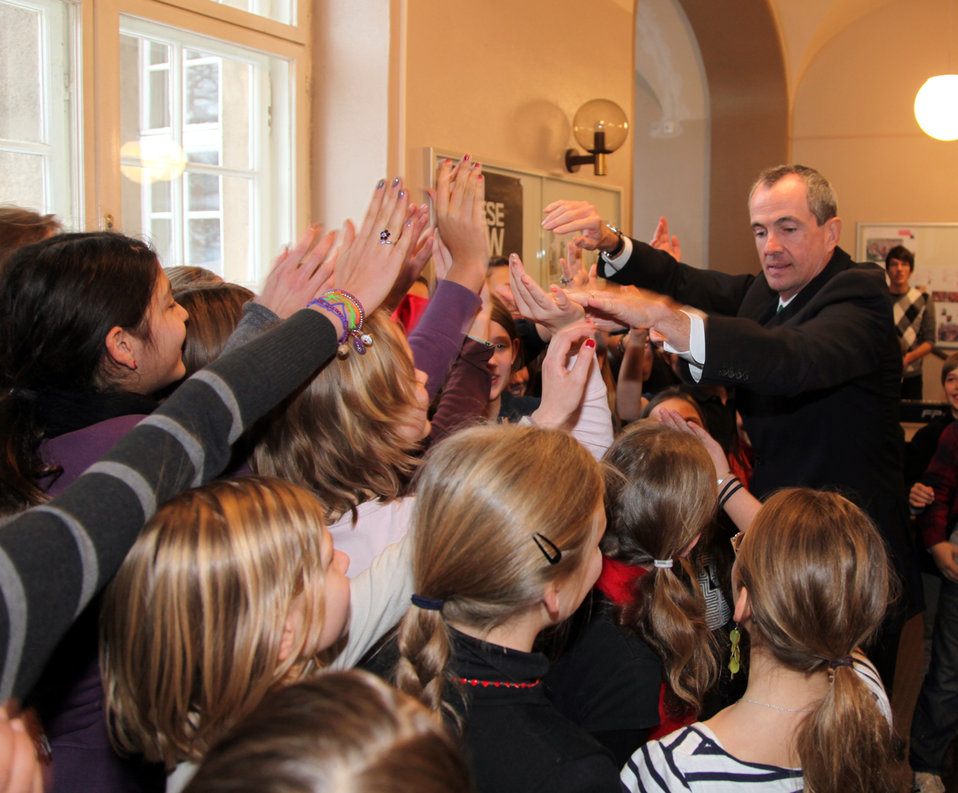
Ambassador Murphy Is Greeted By Students

U.S. Ambassador to Germany Philip D. Murphy is greeted by students caroling during his visit to the Arndt Gymnasium in Berlin-Dahlem, Germany, on December 21, 2010.